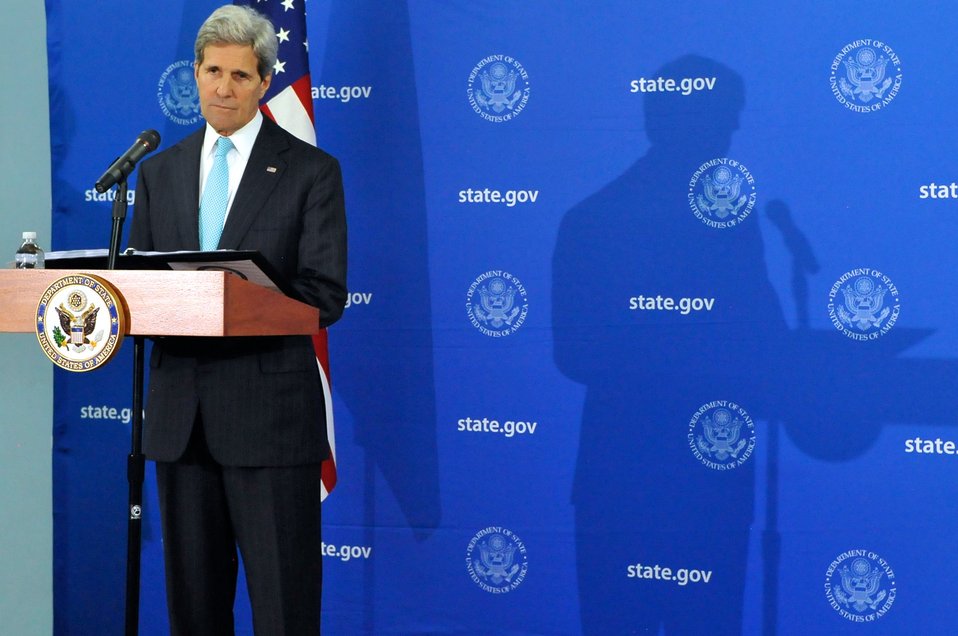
Secretary Kerry Listens to Reporter's Question During News Conference in Juba

U.S. Secretary of State John Kerry listens to a reporter’s question during a news conference that followed his meeting with South Sudanese President Salva Kiir Mayardit in Juba on May 2, 2014.